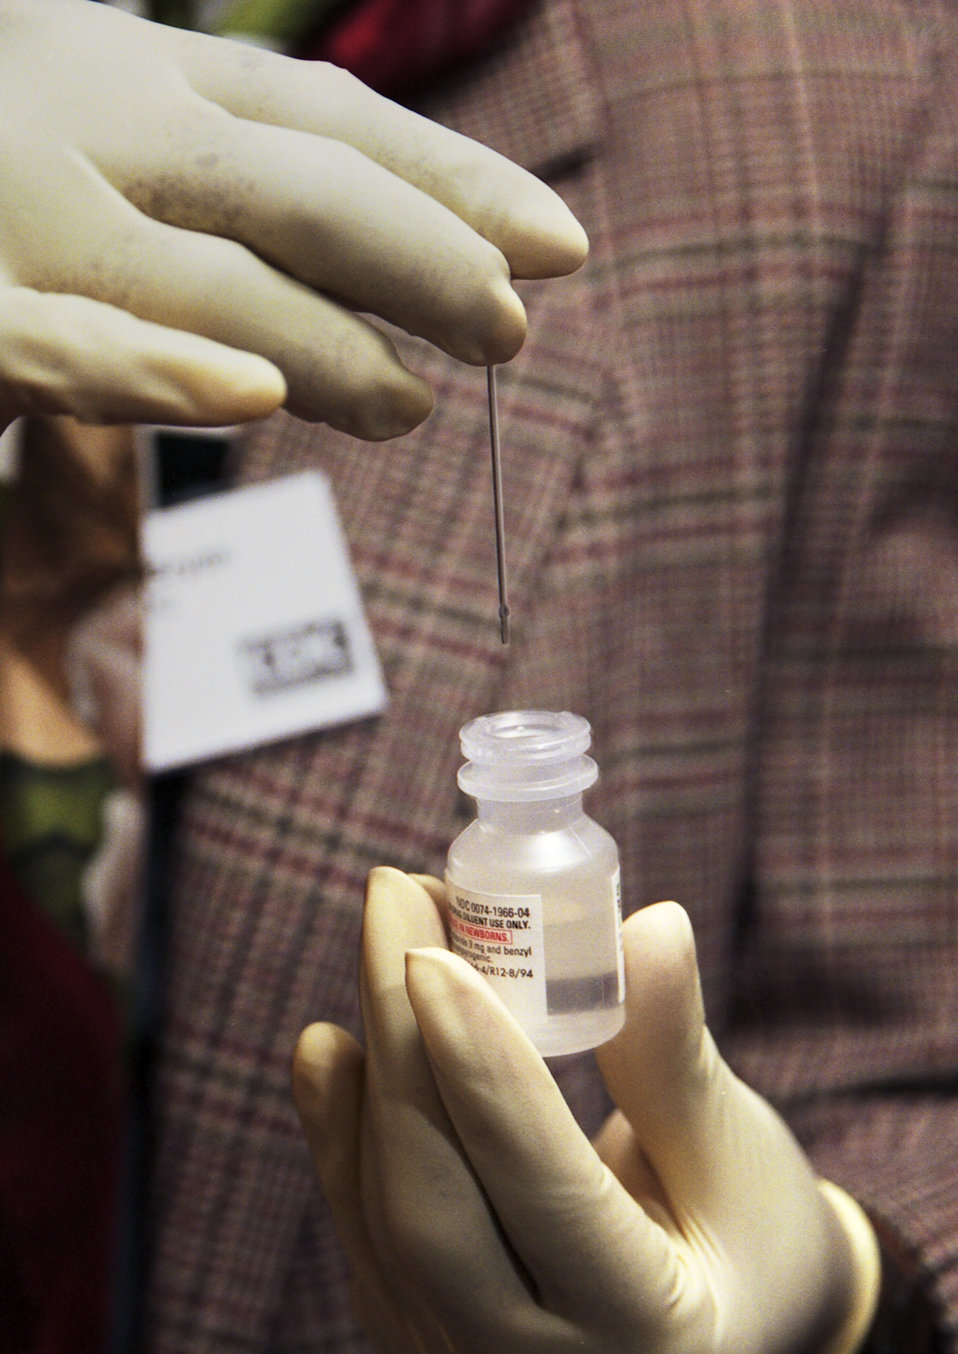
CDC Official removes bifurcated needle from saline solution demonstrating loading of vaccine for application.